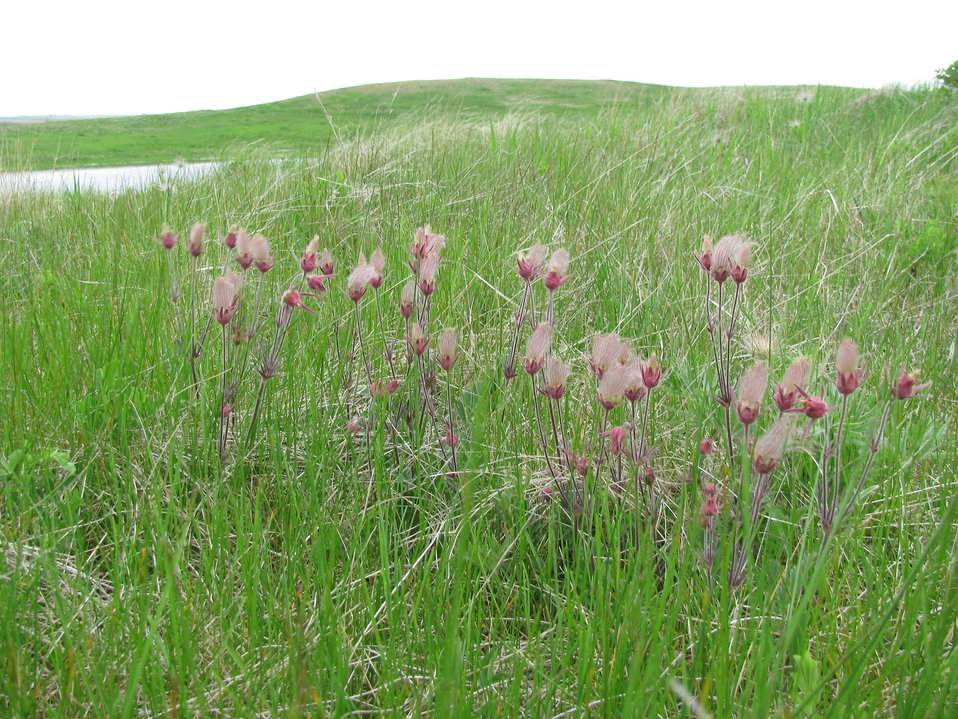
Prairie Smoke

These early spring flowers are in the Rose family. They also go by common names 'torch flower' and 'old man's whiskers'.